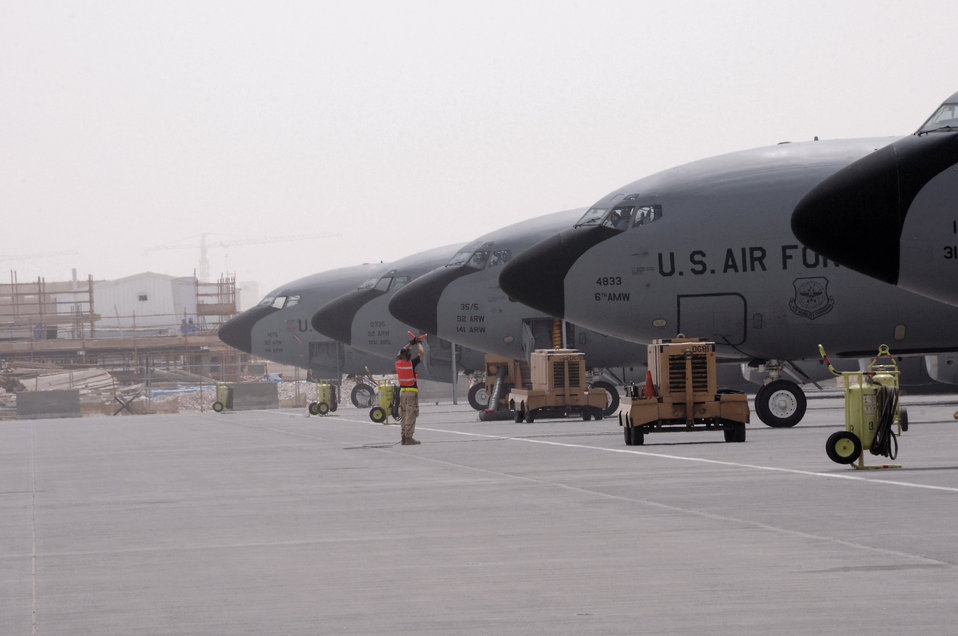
Gas and go

Tech. Sgt. Jim Erickson marshals a KC-135 Stratotanker to a stop upon completion of a refueling mission Aug. 3 at a Southwest Asia air base. Members of the 340th Expeditionary Aircraft Maintenance Squadron refuel all types of bombers, fighters and other support aircraft engaged in operations Iraqi Freedom and Enduring Freedom and Combined Joint Task Force Horn of Africa. Sergeant Erickson is a 340th EAXMS crew chief from Grand Forks Air Force Base, N.D.